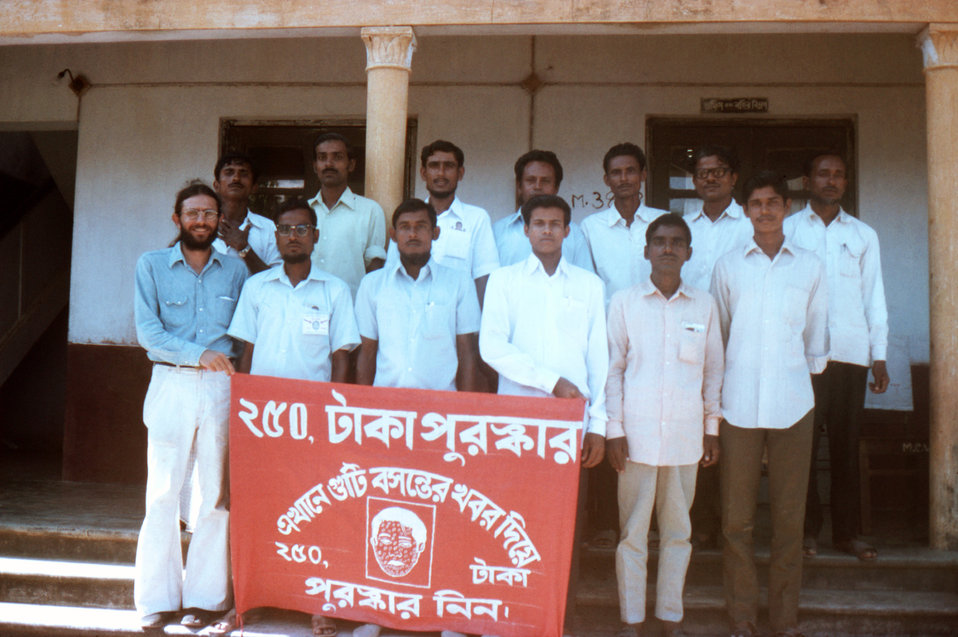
In this November, 1975 image, members of the Patuakhali District Surveillance Team, were preparing for a group photograph, after the National Smallpox Search Program. The team was posed in front of the Patuakhali District Health Office. The Smallpox Reward Banner was being displayed by the group, and smallpox eradication team member, the bearded Dr. Michael Schwartz, could be seen standing on the left.